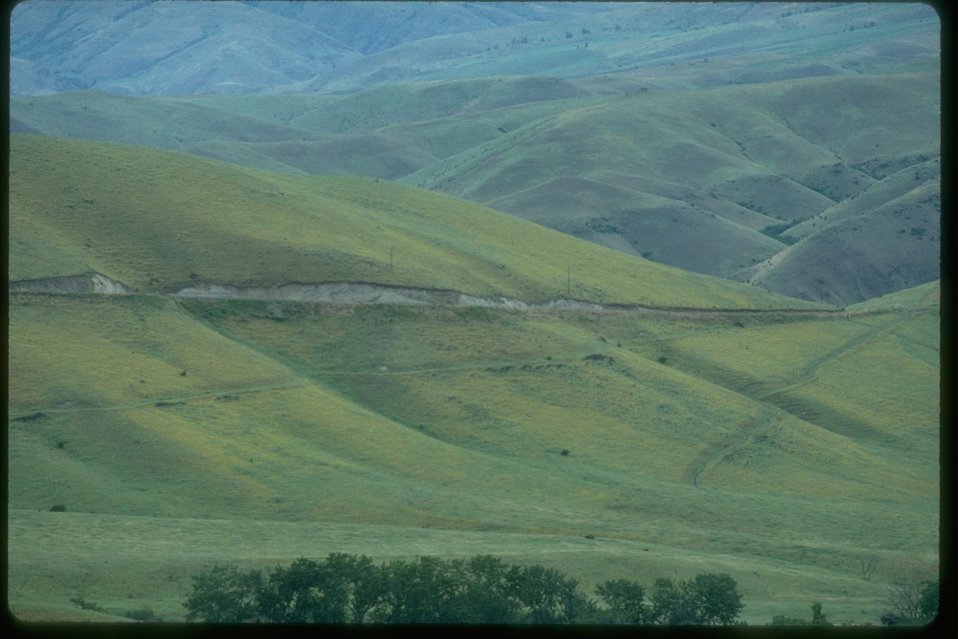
Huge expanse of Yellow Starthistle along road to Pittsburg from the landing near Whitebird, ID.